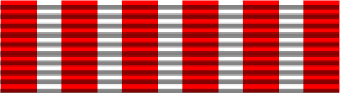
Italiano: == Licenza d'uso: ==